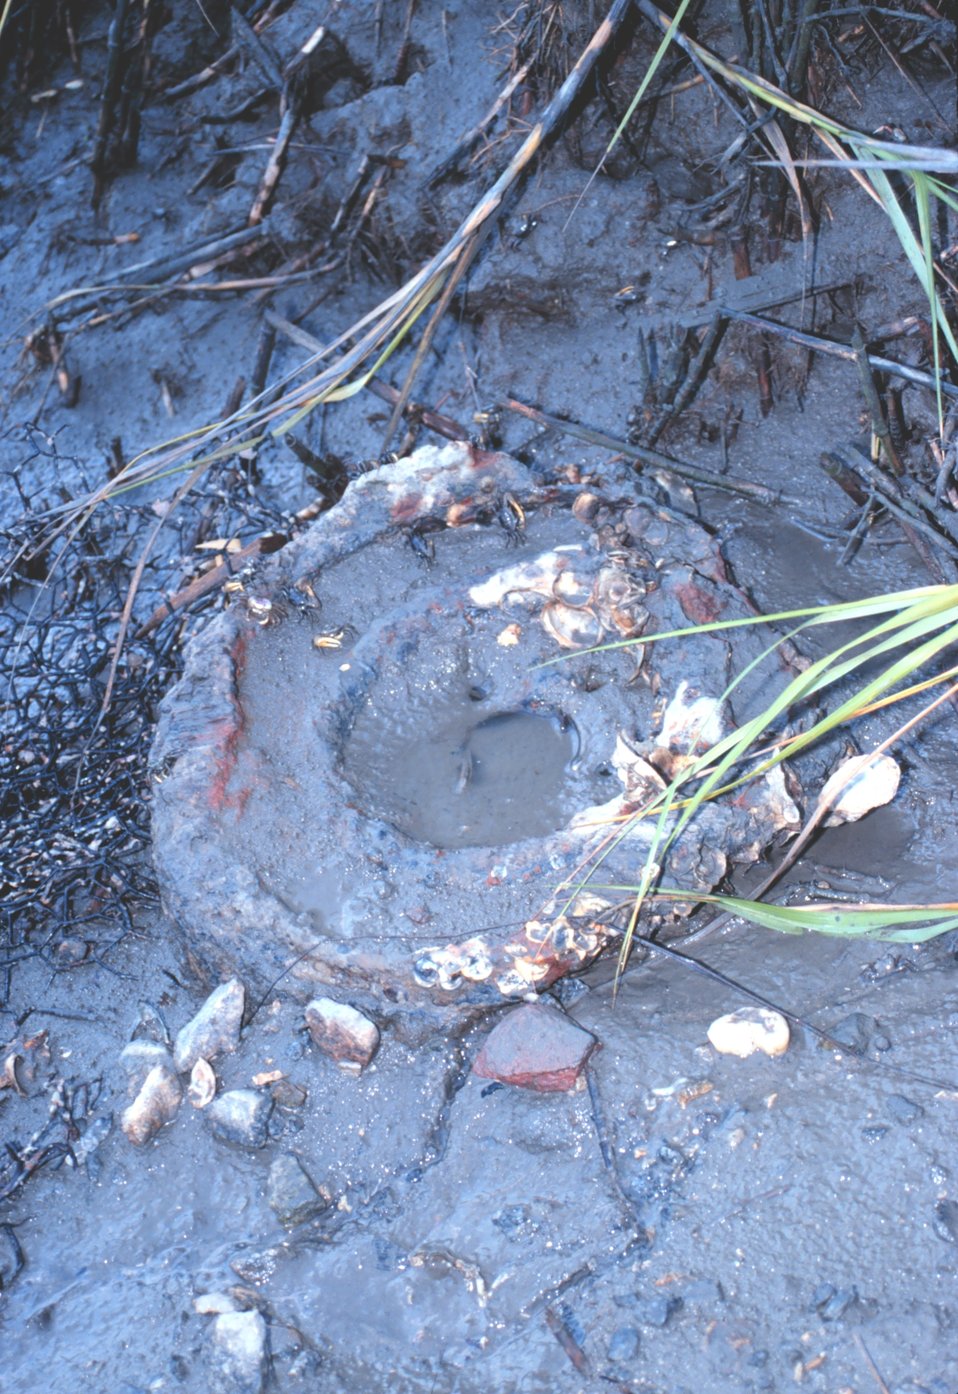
Life in the marsh colonizing a man-made object on Helena Island